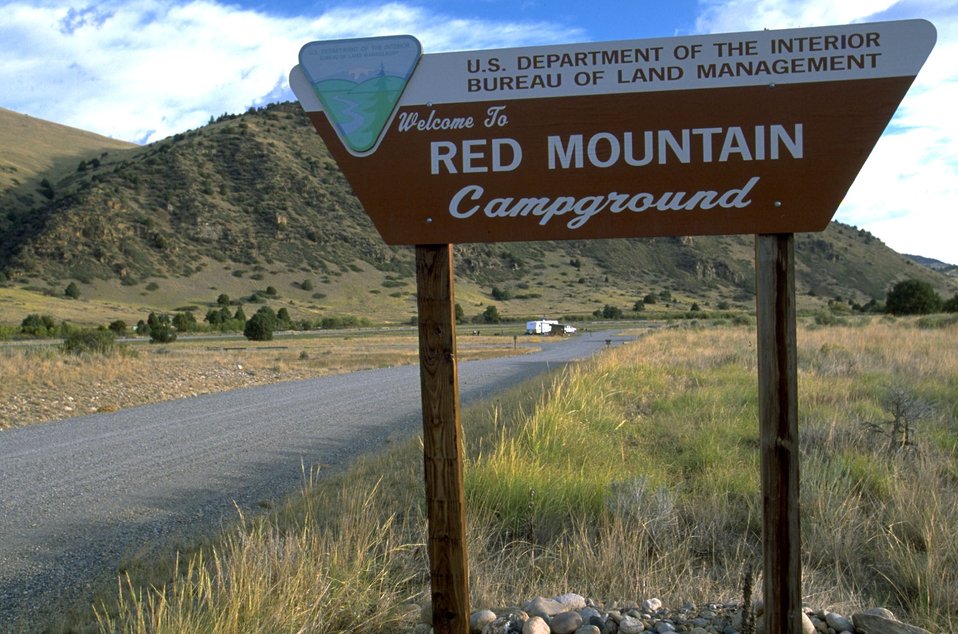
Sign at the entrance to Red Mountain Campgrounds